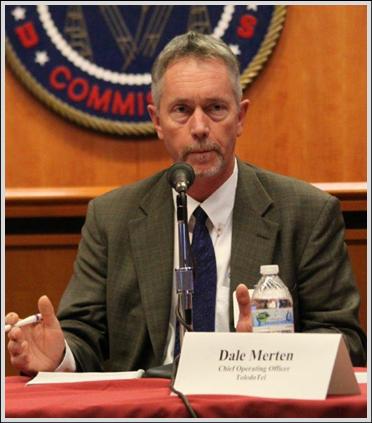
Dale Merten

Panel 4: Discussion of Industry Best Practices to Increase Broadband Adoption Among the Various Technologies